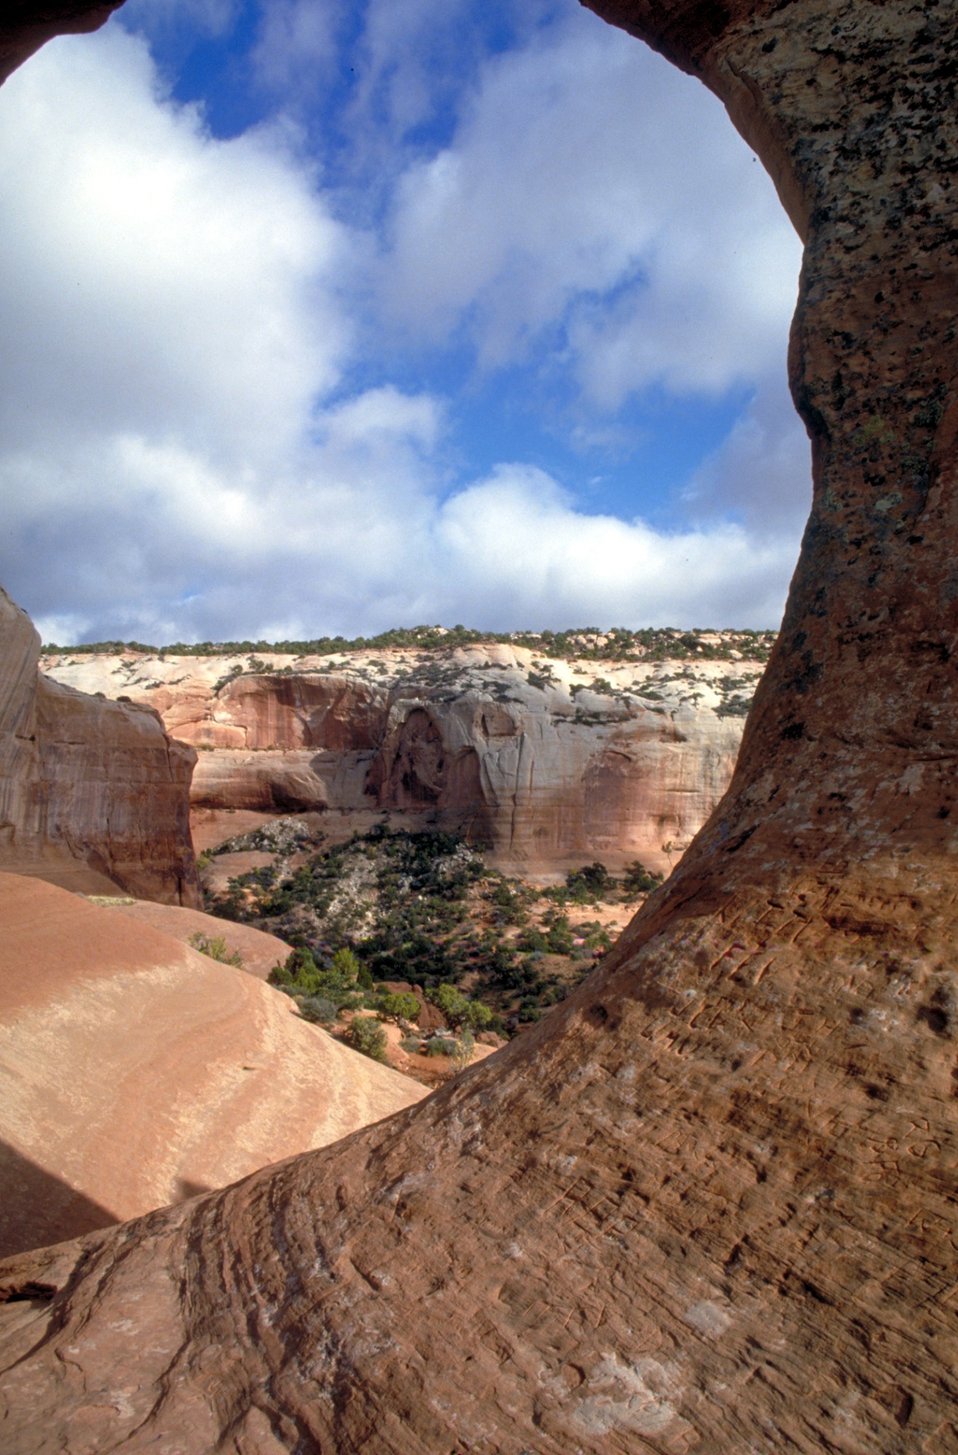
Wilson Arch south of Moab, Utah.